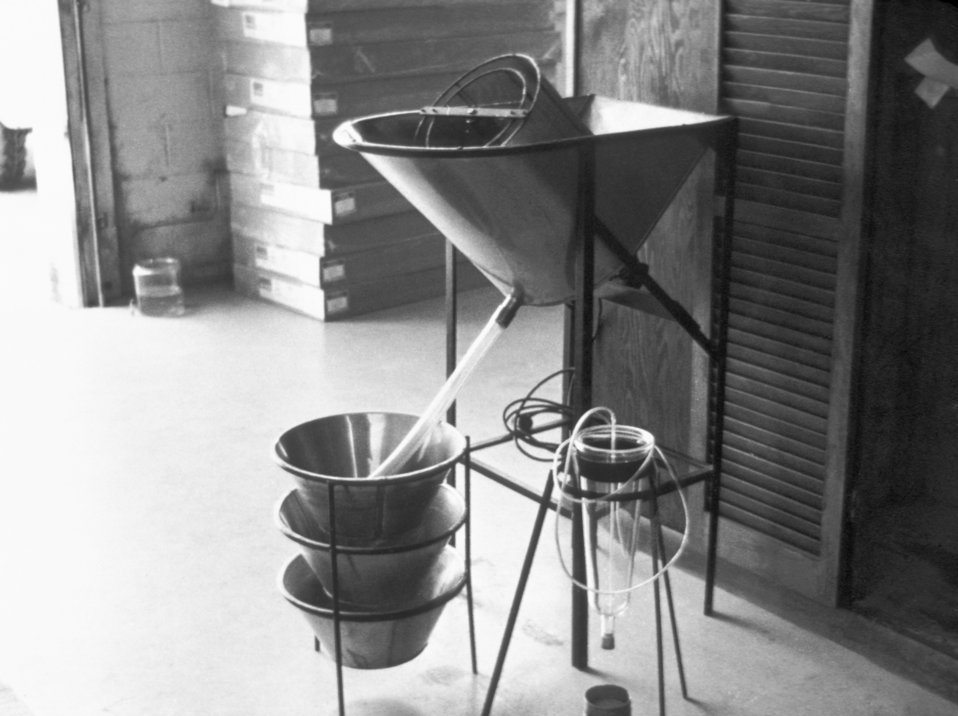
A mosquito egg separator used in a mosquito study, 1975.